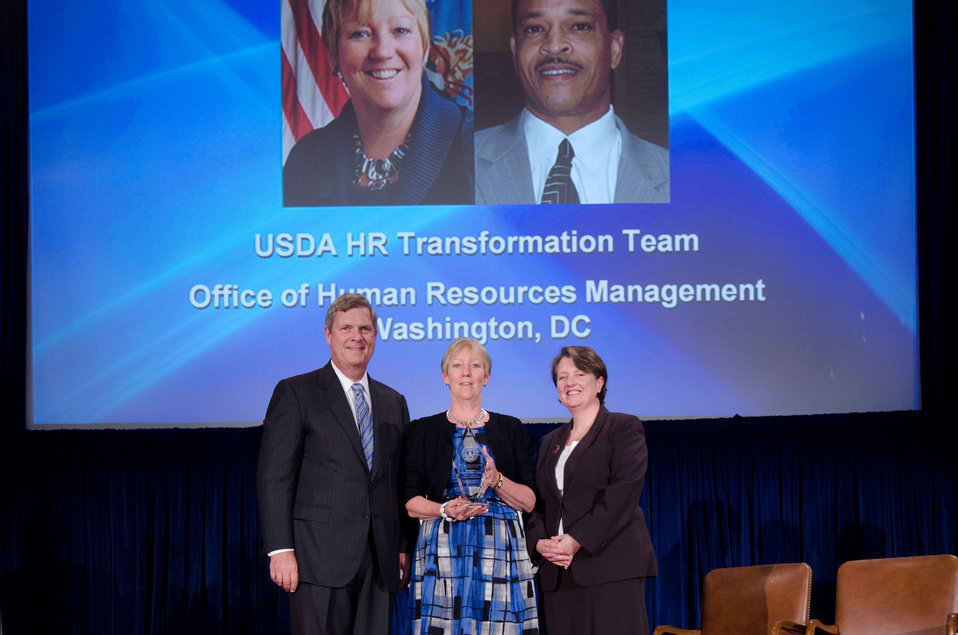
Agriculture Secretary Tom Vilsack (l) and Deputy Secretary Kathleen Merrigan (r), presents the Award to USDA HR Transformation Team, Office of Human Resources Management, Washington, DC. Karen A. Messmore and William P. Milton Jr., Group Leaders. For the OHRM Team’s dedication and hard work resulting in the establishment of a world-class human resources organization that serves as a model for strategic human resources management. On Wednesday, September 14, 2011 in the Jefferson Auditorium at the US Department of Agriculture in Washington, DC.